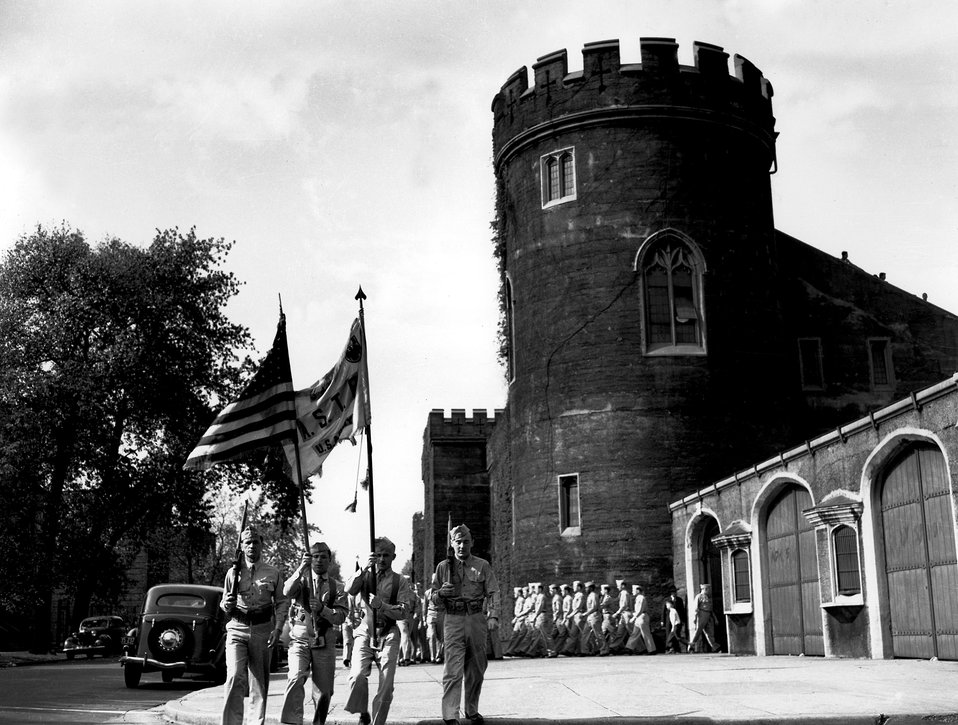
Army unit marches out of Stagg Field, University of Chicago.